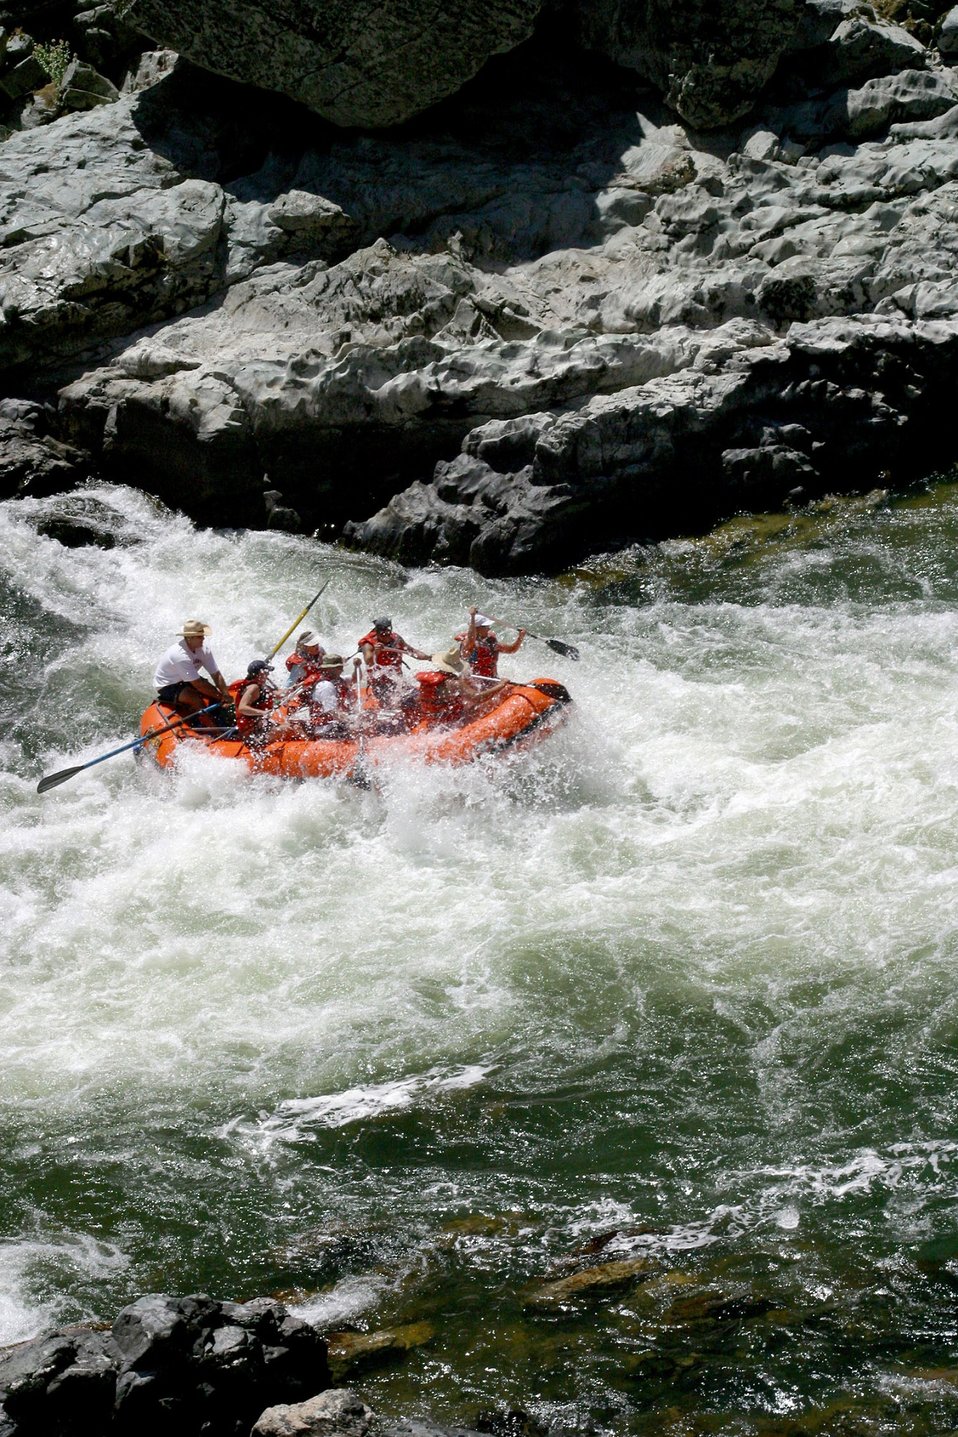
Boater at Grave Creek Falls